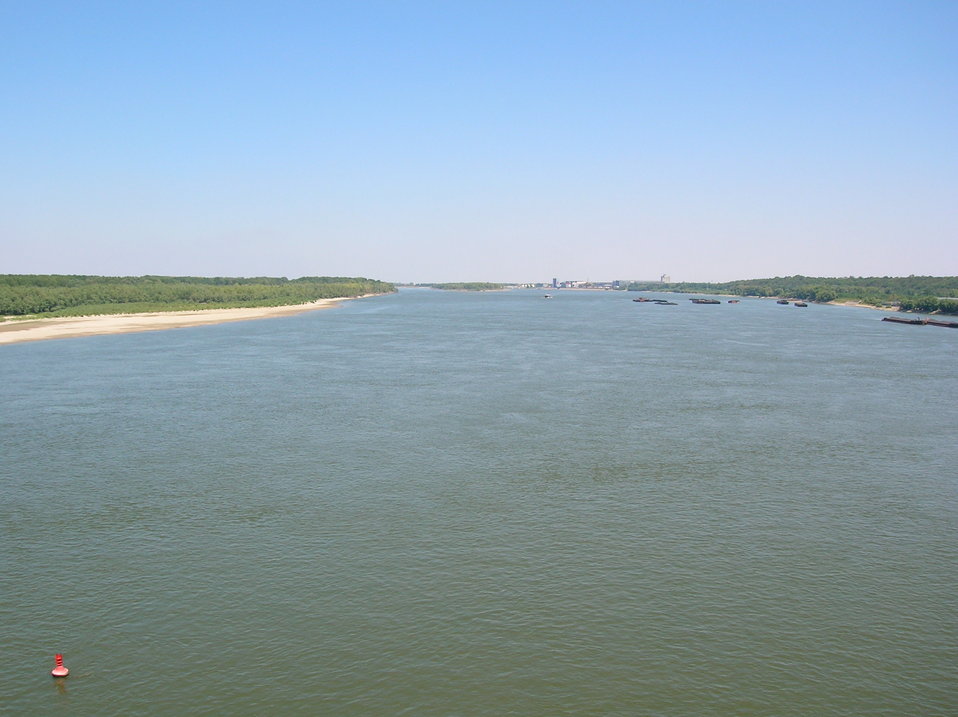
Danube from the train, on the bridge crossing the border between Giurgiu (Romania) and Ruse (Bulgaria). Fran√ßais†: Danube vu du train, sur le pont traversant la fronti√®re entre Giurgui (Roumanie) et Rouss√© (Bulgarie).